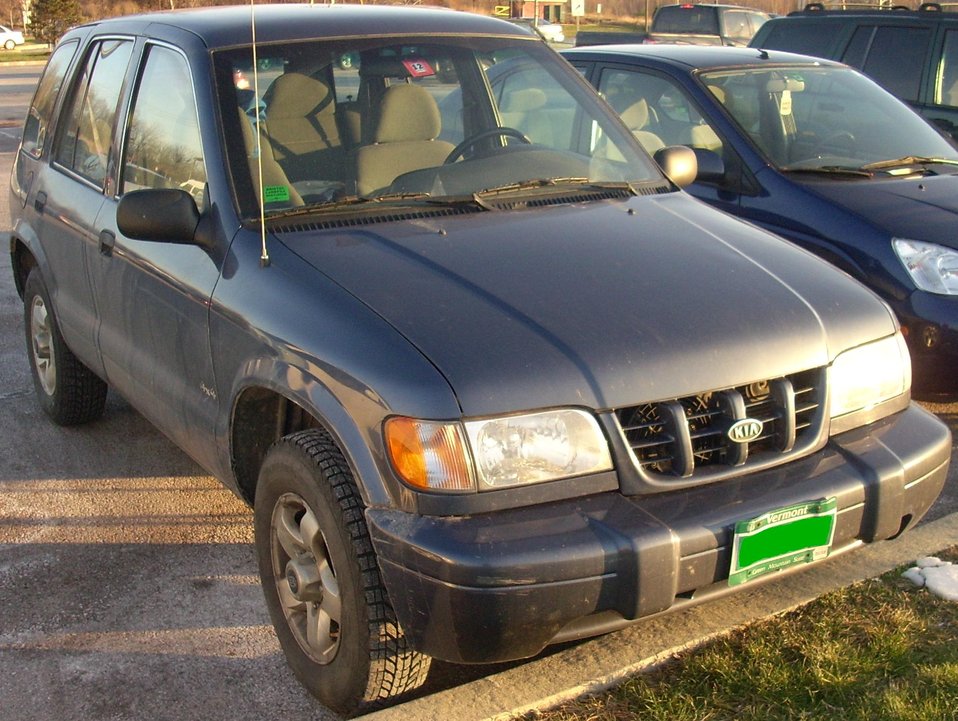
2000-2001 Kia Sportage photographed in Williston, VT, USA.